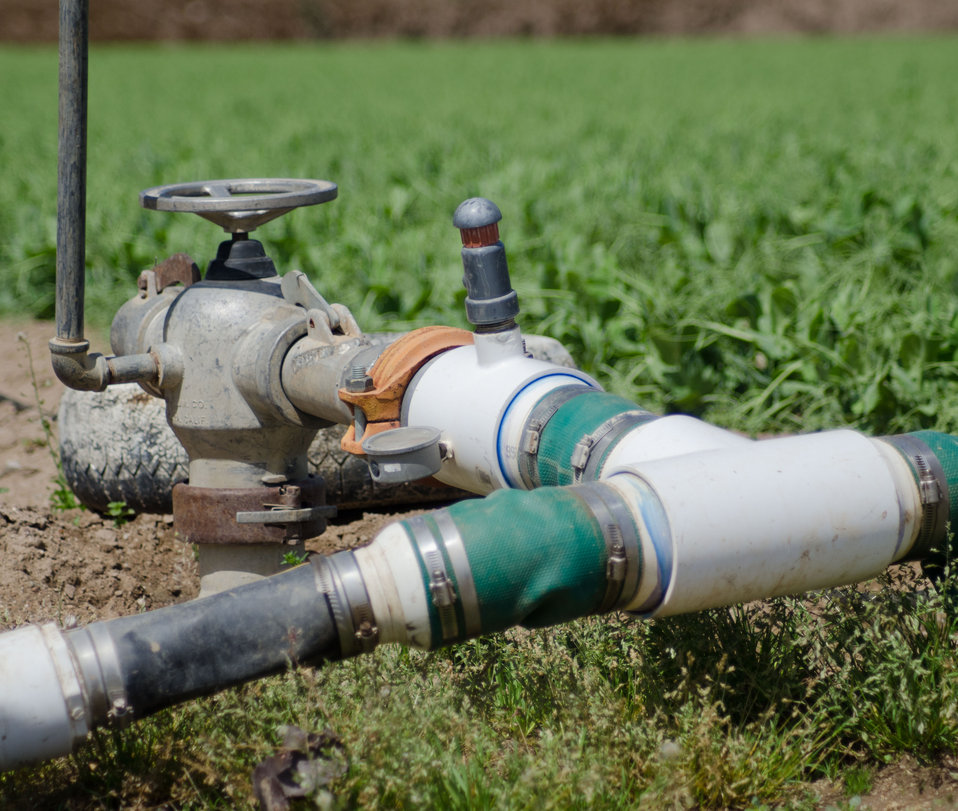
Micro irrigation begins with an economical reuse of irrigation water hydrants at Leafy Greens Farm in the Salinas Valley of California on Thursday, June 16, 2011. A series of reduction couplings lead to the collapsible header tube that supply water to dozens of separate tubes. That take water to every plant in the row. Water evaporation is kept to a minimum because water is delivered to the soil, not sprayed into the air or to exposed areas.